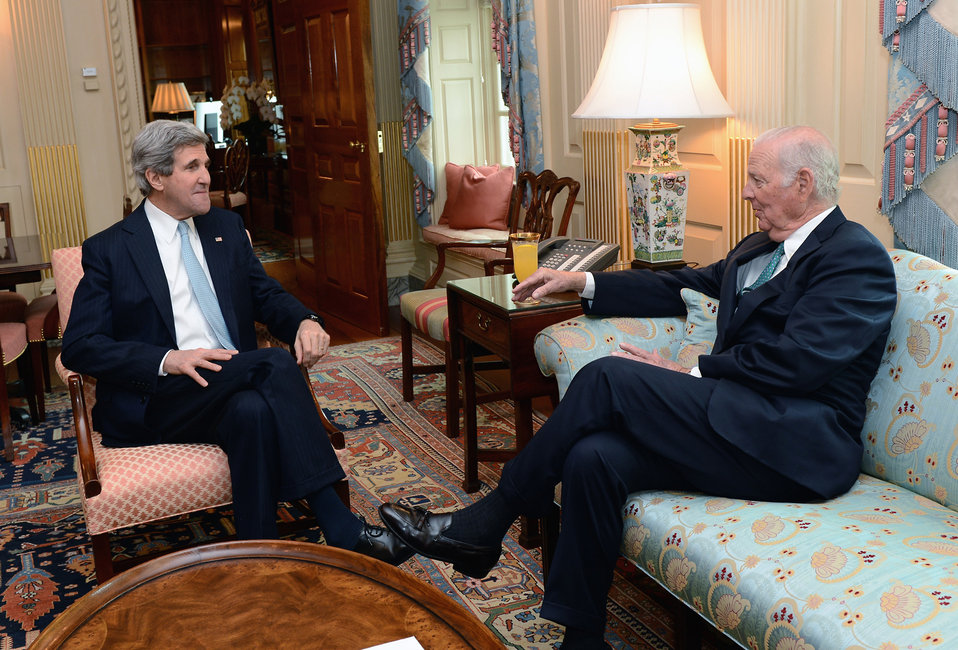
Secretary Kerry Meets With Former Secretary Baker

U.S. Secretary of State John Kerry meets with former Secretary of State James A. Baker, III at the U.S. Department of State in Washington, D.C. on February 5, 2013.